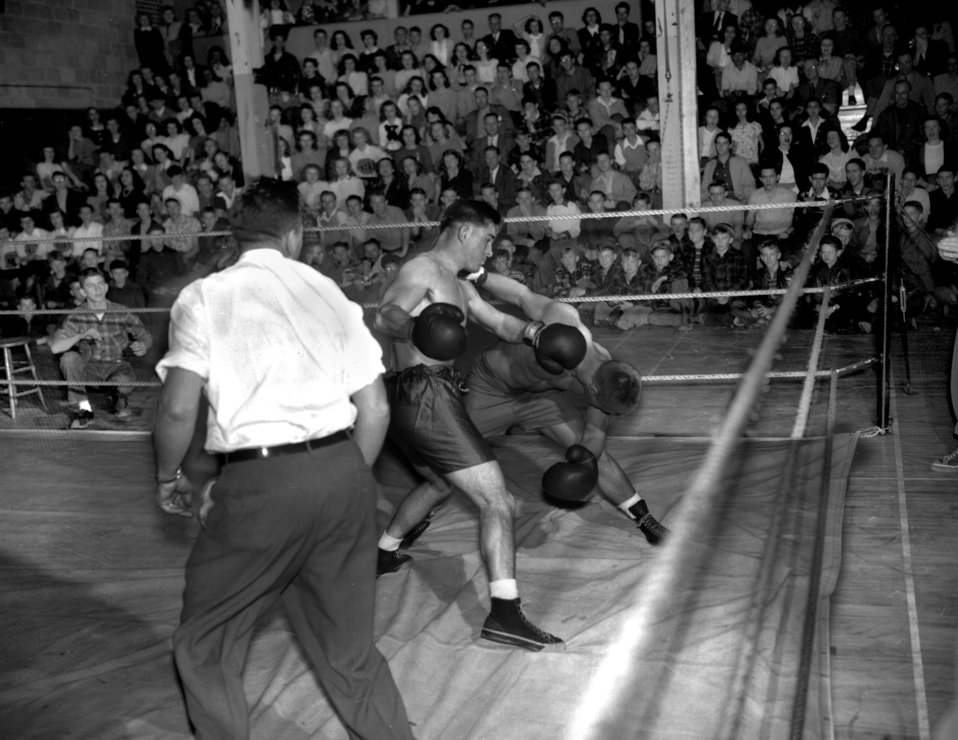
High School Boxing Match

4304-13a DOE photo by Ed Westcott

Oak Ridge Tennessee 2-6-1948